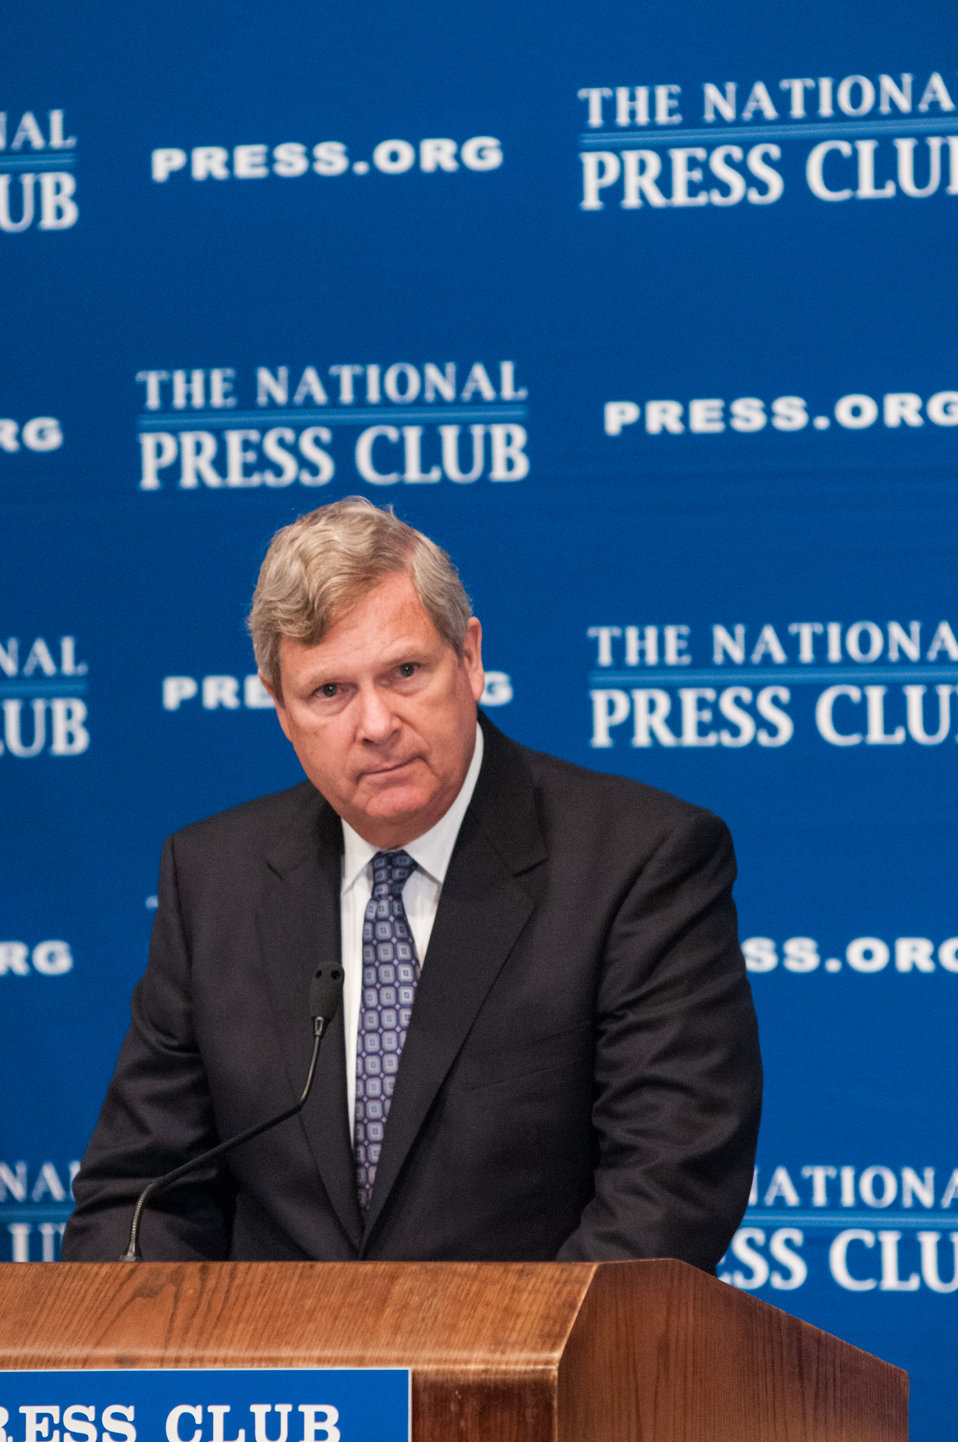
Agriculture Secretary Tom Vilsack discusses the vision for the U.S. Department of Agriculture’s (USDA) future efforts to assist America to adapt to modern environmental challenges at the National Press Club in Washington, D.C. on Wednesday Jun. 5, 2013.